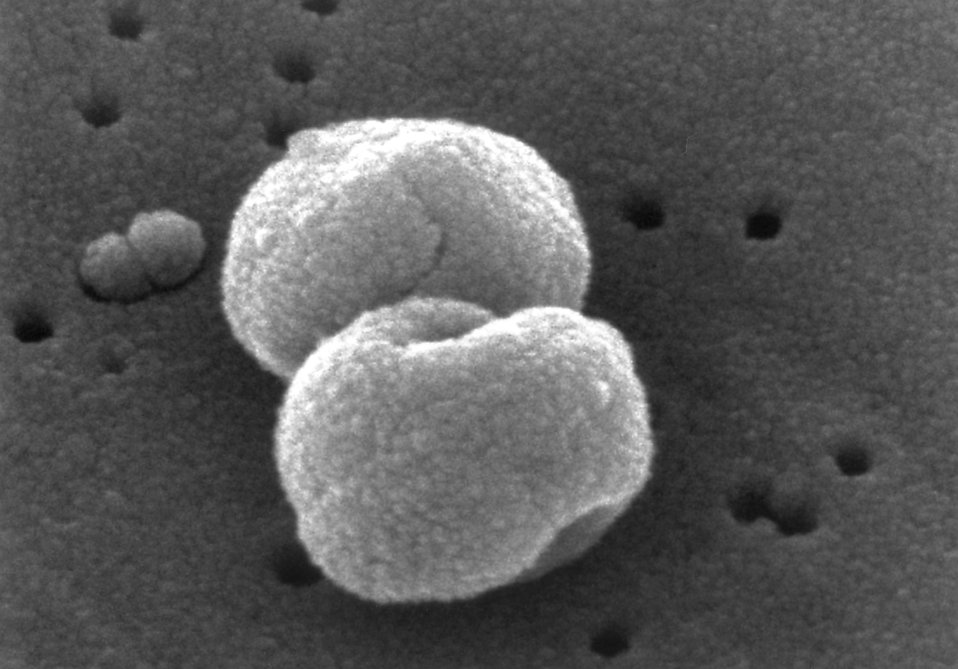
Scanning electron micrograph (SEM) of a number of Gram-positive Streptococcus pneumoniae bacteria.